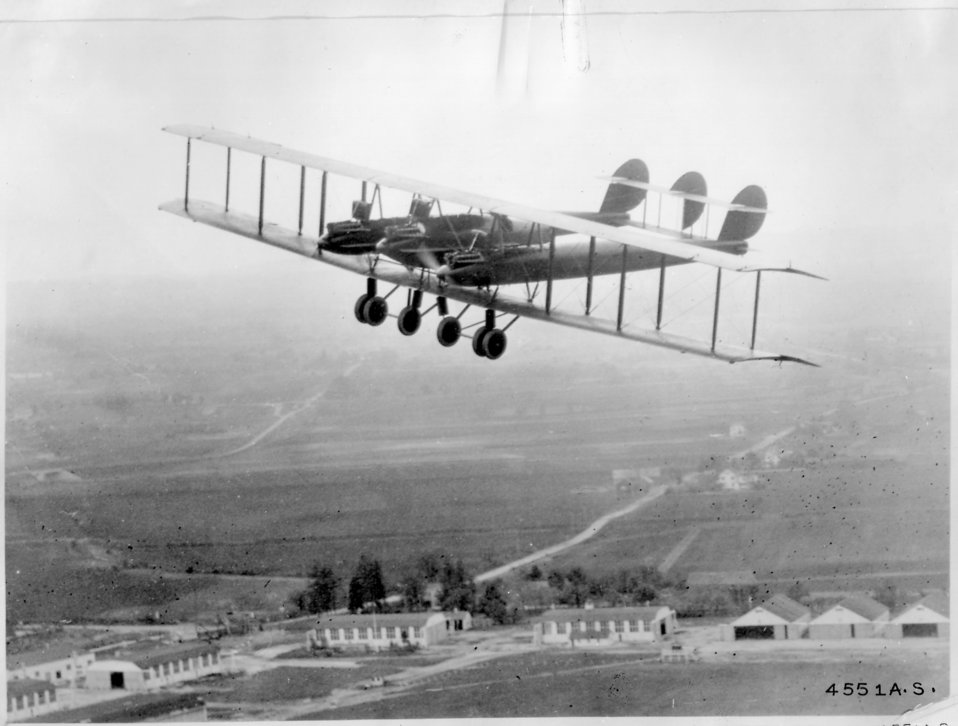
L.W.F. Giant Flying Plane

EARLY YEARS -- L.W.F. Giant Flying Plane.The L-W-F Company was founded in December 1915. The company was named after its founders, Edward Lowe, Jr., Charles Willard, and Robert Fowler, and some think also for the laminated wood fuselage it developed.